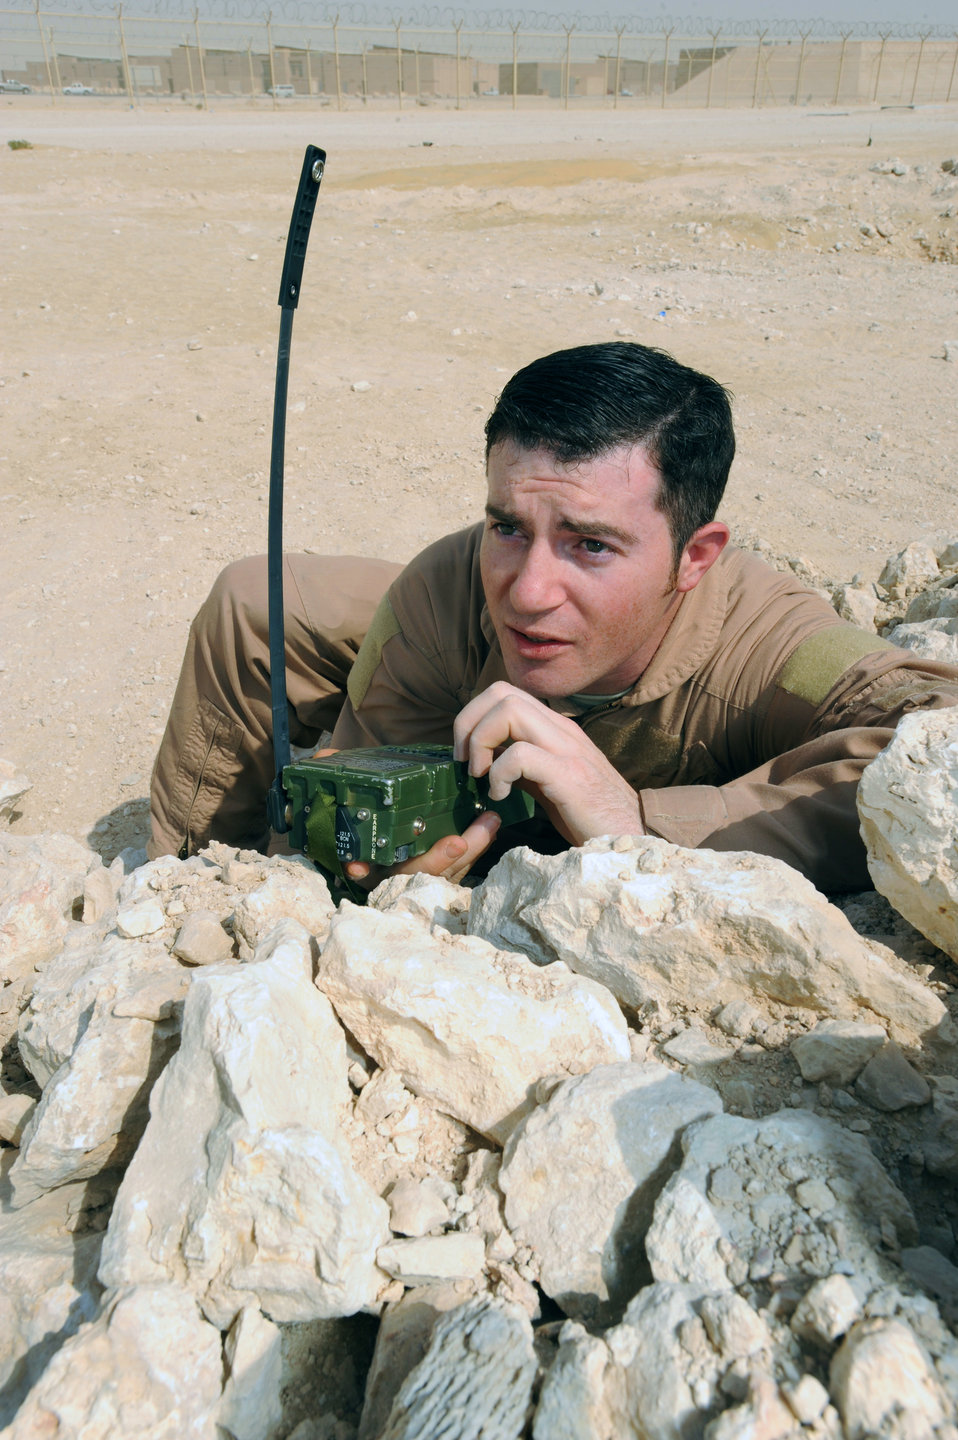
Airmen help aircrews return if all goes awry

Staff Sgt. Eric Zwoll demonstrates the use of a PRC-112 survival radio March 17 at an air base in Southwest Asia. The radio is used to contact recovery forces if a member of an aircrew should become isolated in enemy territory. Sergeant Zwoll is a a survival, evasion, resistance, and escape specialist with the Combined Air and Space Operations Center. He is a native of Orma, W. Va., and is deployed from Fairchild Air Force Base, Wash.